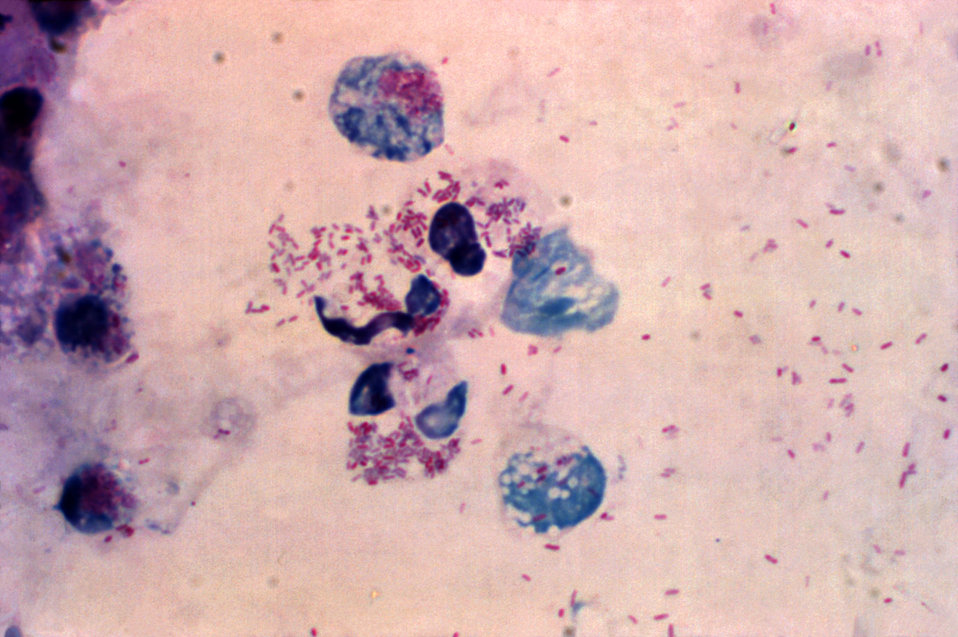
This light photomicrograph depicted numbers of Gram-negative Legionella pneumophila bacteria that had been extracted from the peritoneum of a Guinea pig, which had been stained using the Gimenez method. These organisms are responsible for causing the disease known as 'Legionnaires'' disease.Legionellosis disease has two distinct forms:-Legionnaires' disease,